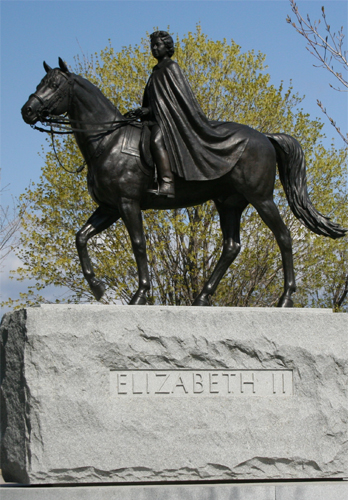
Statue of Queen Elizabeth II on Parliament Hill, Ottawa